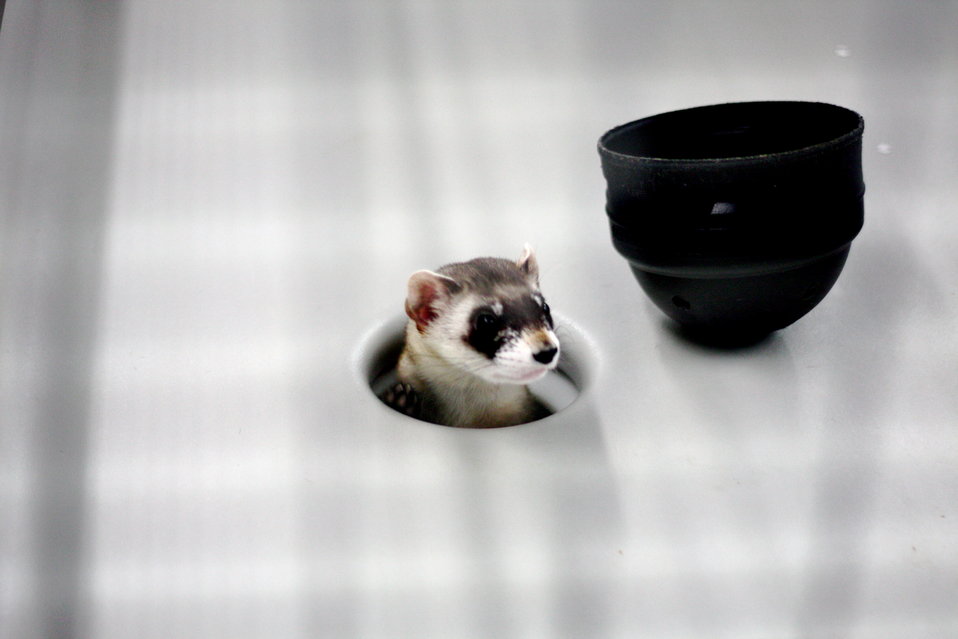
Interns visit the NBFFCC

In the summer of 2012, USFWS Region 6 interns visited the National Black-footed Ferret Conservation Center (NBFFCC) in Colorado to learn how the program reintroduces the endangered Black-footed ferret back into its native habitat.